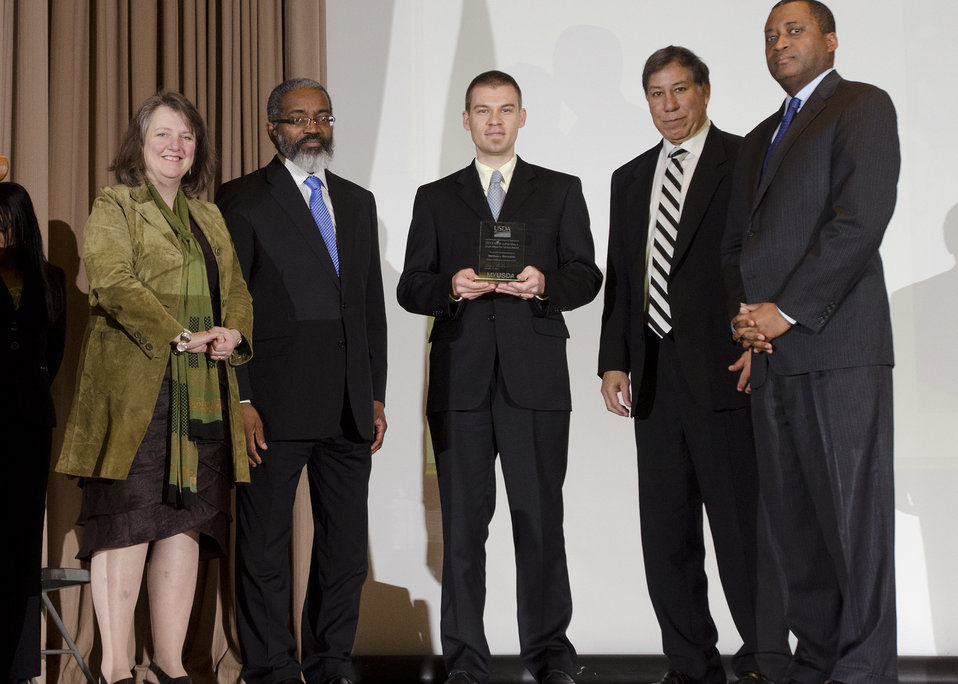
U.S. Department of Agriculture (USDA) Agricultural Research Service (ARS) Research Entomologist from Ft. Pierce, FL Matthew L. Richardson receives the Dr. Martin Luther King, Jr. National Service Day Drum Major Service Award at the USDA Jefferson Auditorium in Washington, D.C. on Tuesday, Jan. 15, 2013. (L to R, Agriculture Deputy Secretary Kathleen Merrigan, USDA Acting Assistant Secretary for Administration Dr. Gregory Parham, Matthew L. Richardson, Agriculture Under Secretary for Marketing and Regulatory Programs (MRP) Ed Avalos, and Agriculture Assistant Secretary for Civil Rights Dr. Joe Leonard).